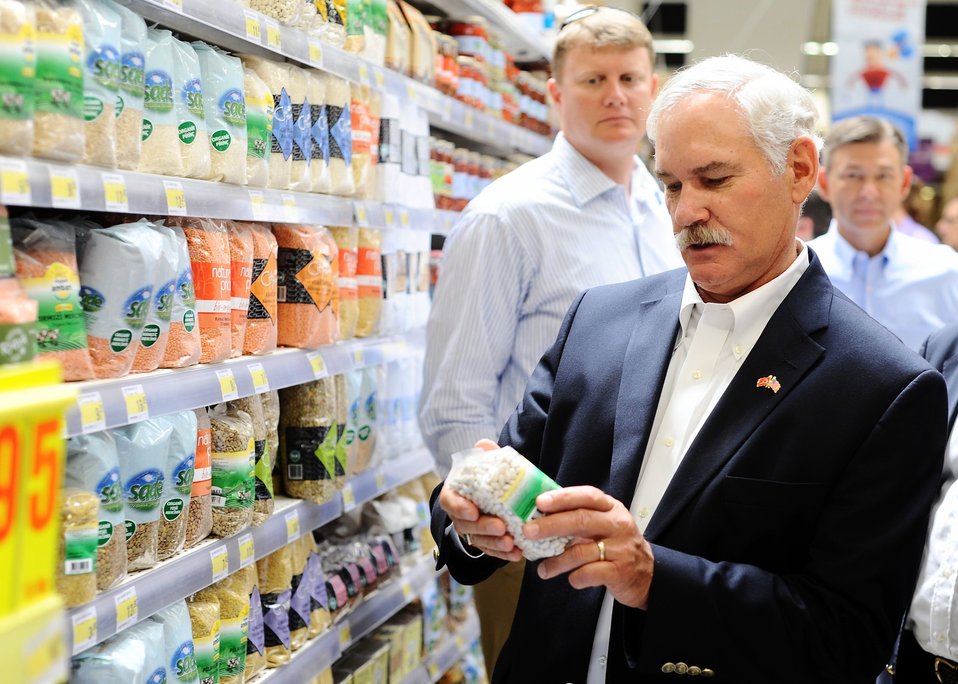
Acting Agriculture Deputy Secretary Michael Scuse examines dry beans and lentils on a tour of the Carrefour supermarket in Istanbul, Turkey on Monday, Jun. 10, 2013. Deputy Secretary Scuse leads the Agibusiness Trade Mission to Turkey to promote U.S. agricultural exports to Turkey. Representatives from Iowa, Minnesota, Missouri, Nebraska, North Dakota, and Pennsylvania, as well as 20 U.S. companies are participating.